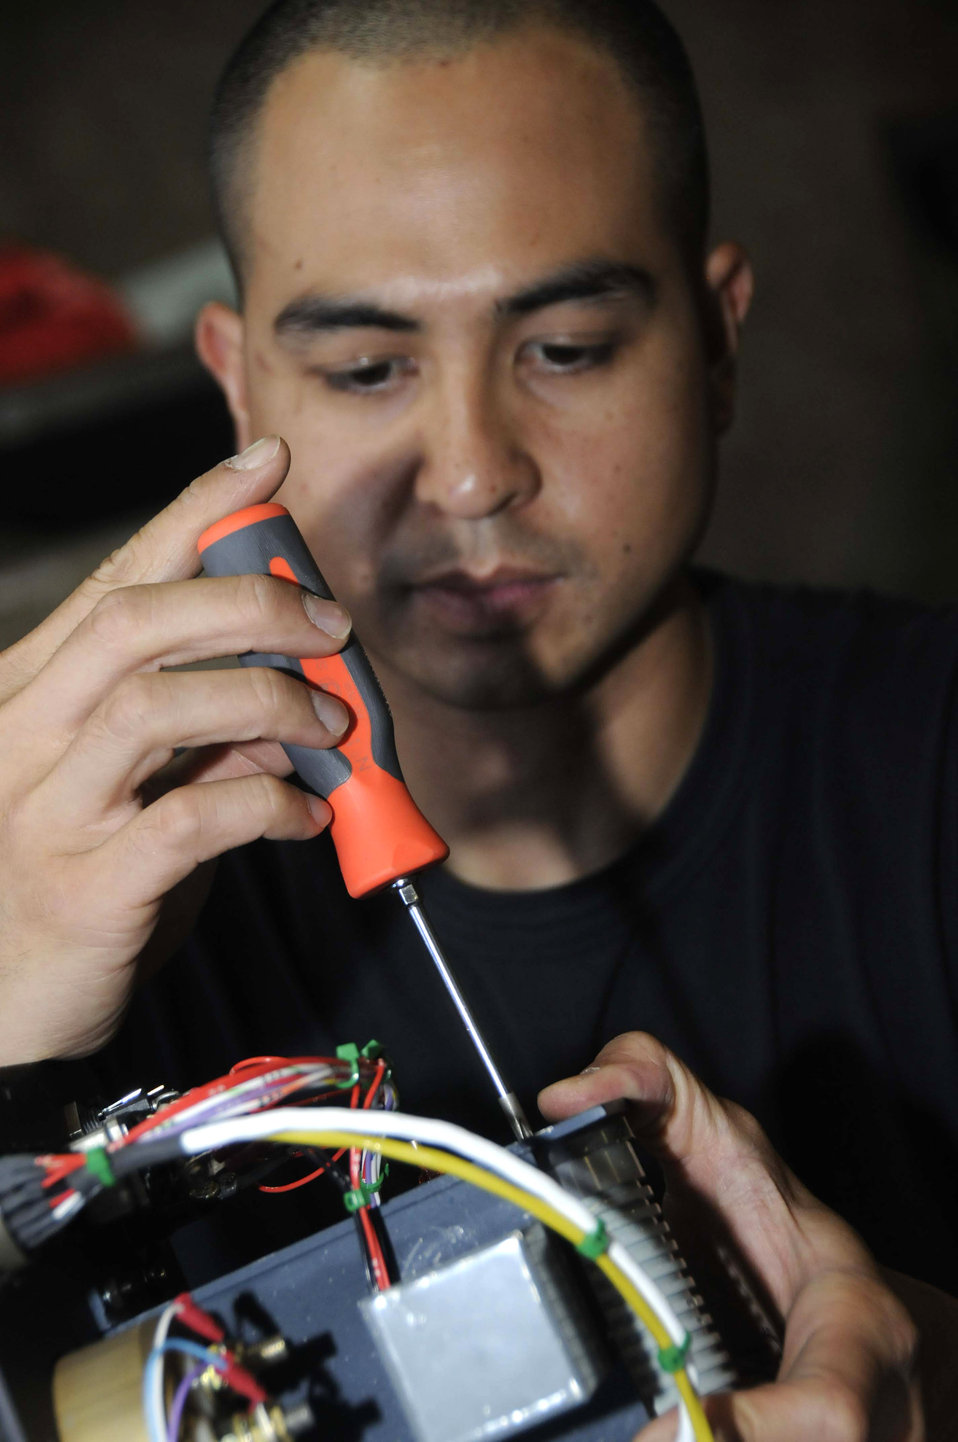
PMEL Airmen deliver precision to warfighters

Staff Sgt. William Kunsman troubleshoots a temperature datum set for a C-130 Hercules Aug. 4. Sergeant Kunsman is with the 379th Expeditionary Maintenance Squadron's Precision Measurement Equipment Laboratory at an air base in Southwest Asia. He is deployed from Holloman Air Force Base, N.M.